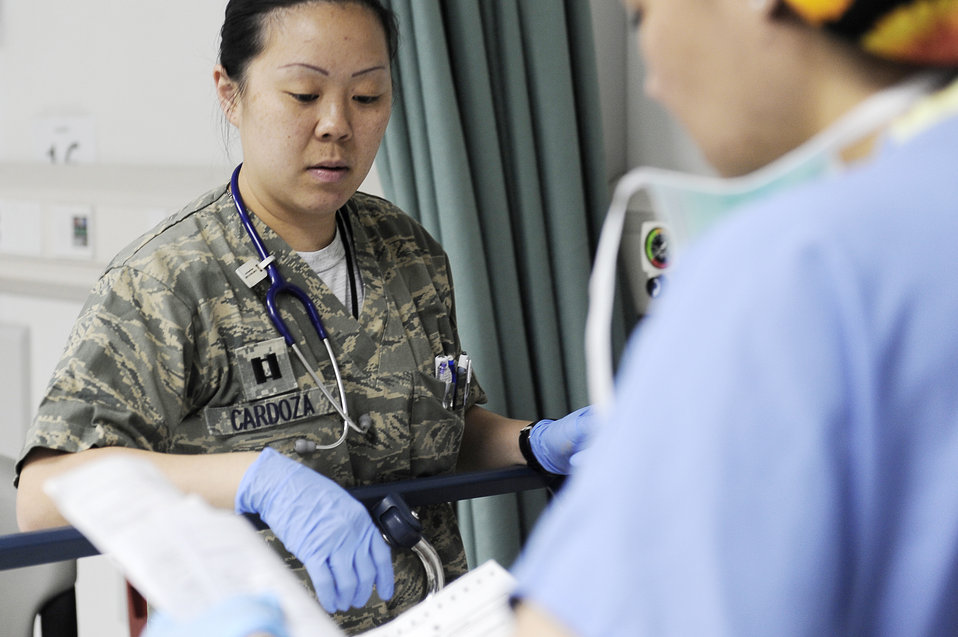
Medical team in Southwest Asia

Capt. Christine Cardoza gets briefed on the status of a patient May 5, 2010, at the Craig Joint Theater Hospital at Bagram Airfield, Afghanistan. Captain Cardoza is with the 455th Expeditionary Medical Group/Task Force Medical East deployed from Nellis Air Force Base, Nev.